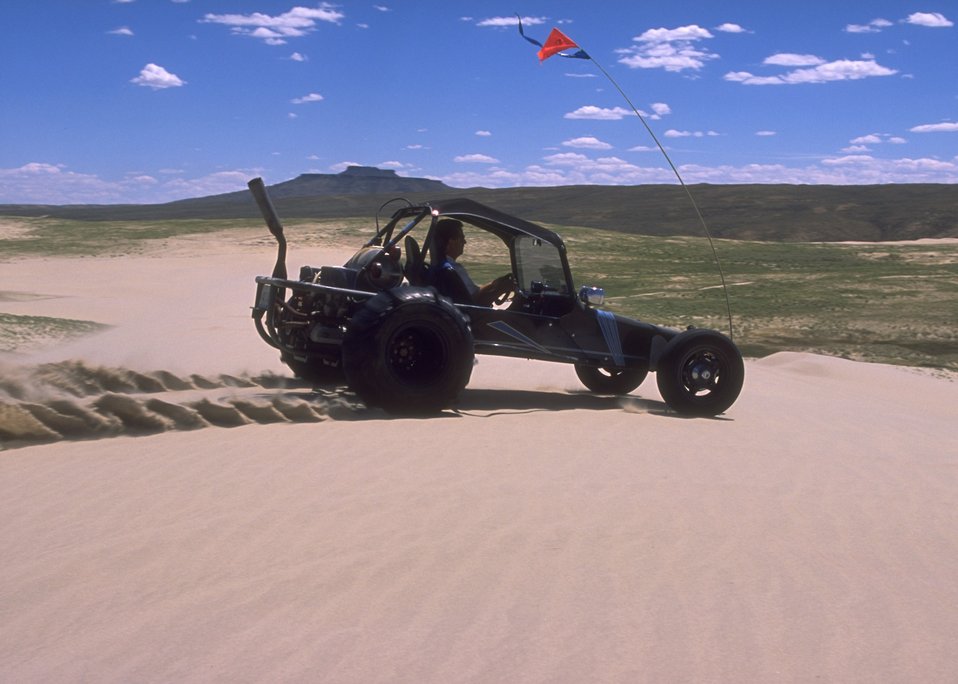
Sand Dunes OHV Area, Rock Springs Field Office.